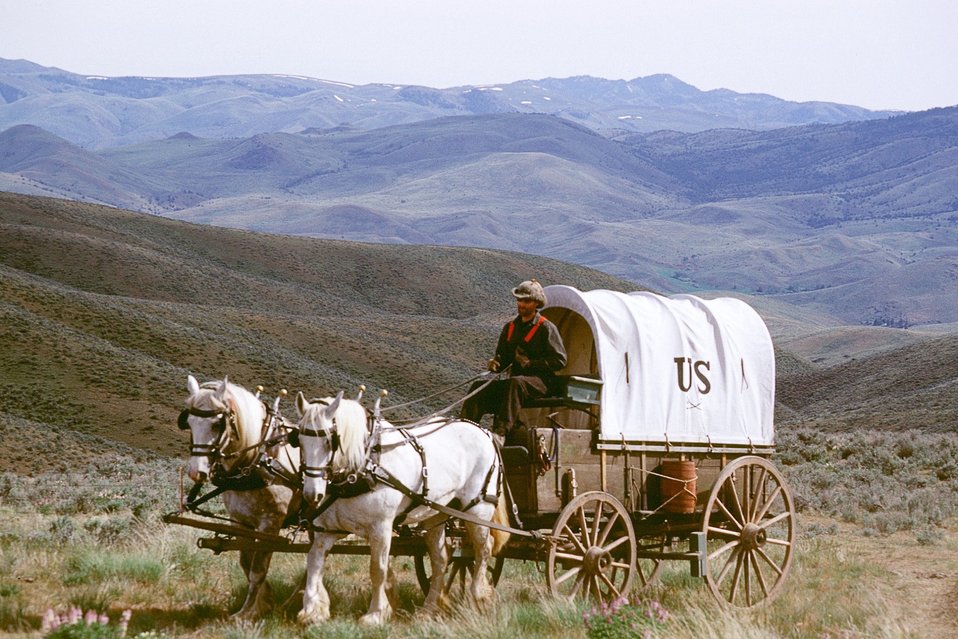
Covered wagon and pioneer on Oregon Trail. NHOTIC 10th Anniversary, wagon train reenactment.